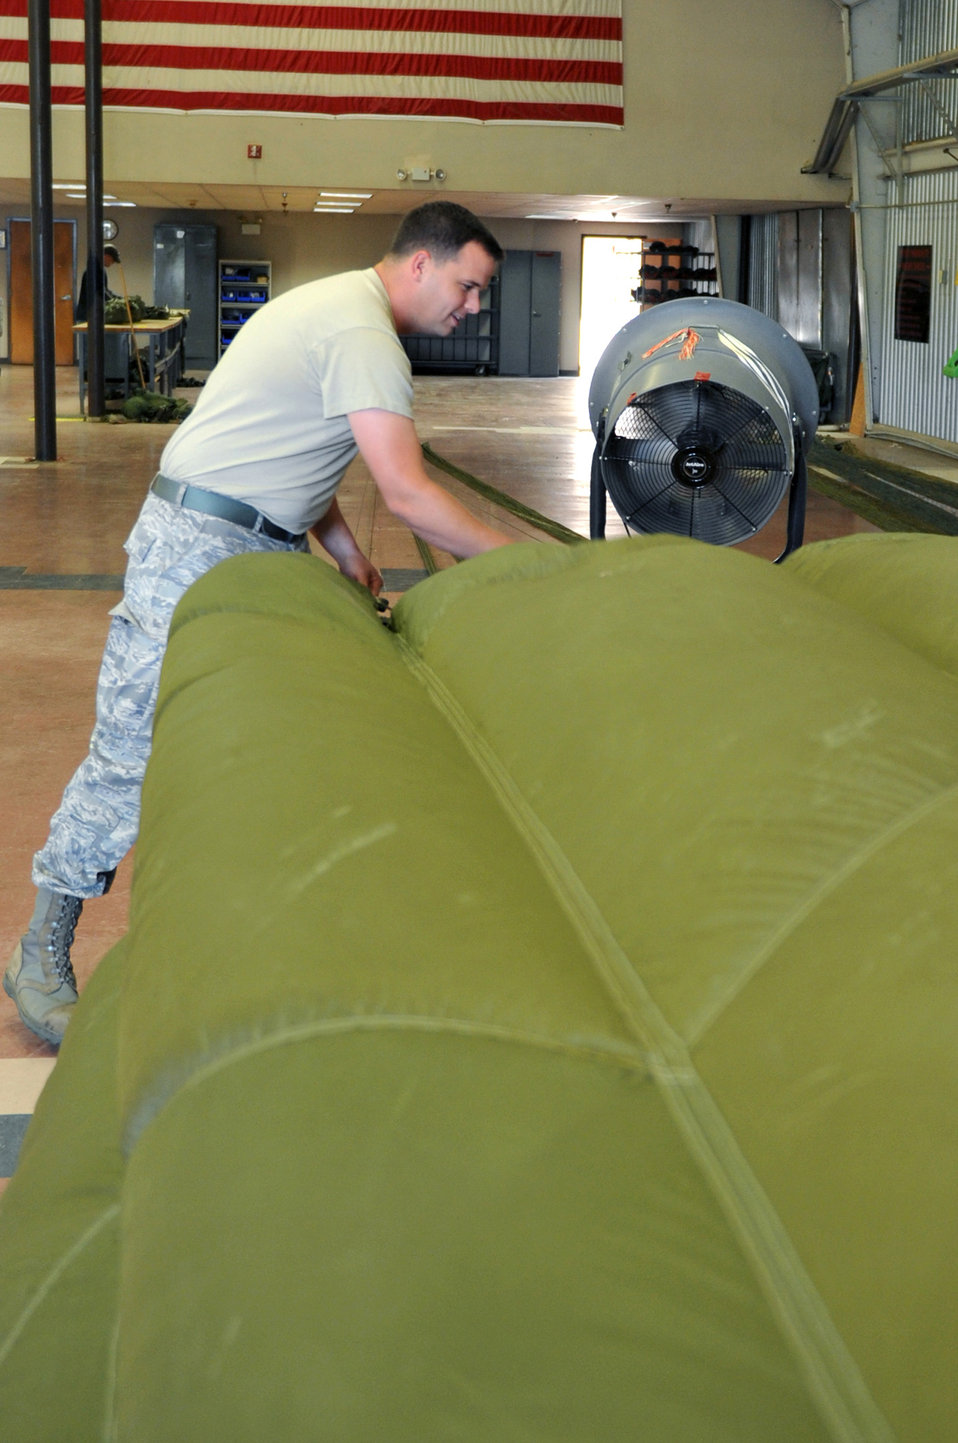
Surge week

Staff Sgt. Jamie Screeton inspects a parachute during the airing process April 14, 2011, at Little Rock Air Force Base, Ark. The inspection and airing process is one of three steps involved in preparing a pallet for airdrop.